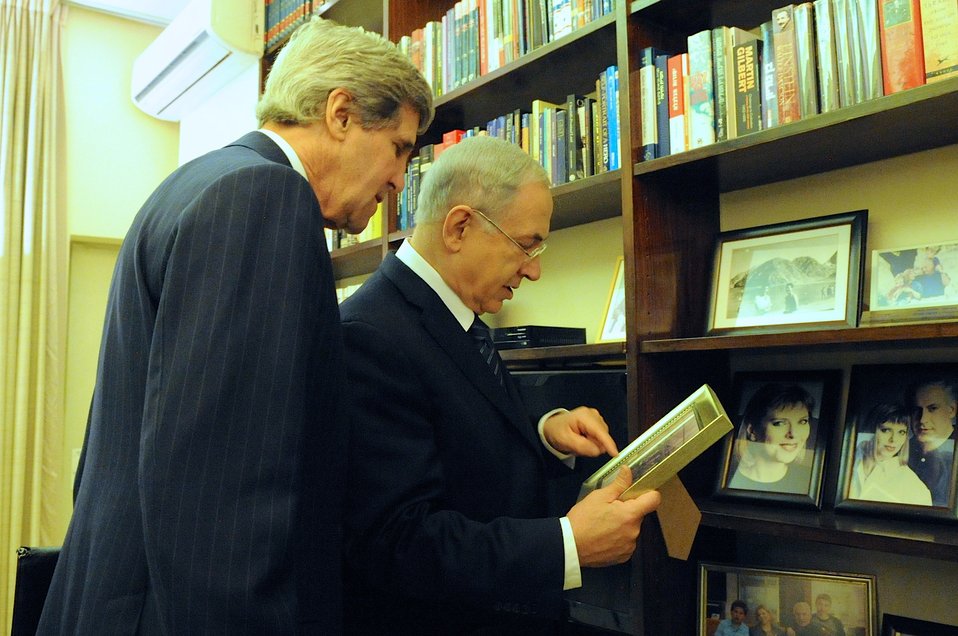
Israeli Prime Minister Netanyahu Shows Secretary Kerry Military Photo

Israeli Prime Minister Benjamin Netanyahu shows U.S. Secretary of State John Kerry a photo of him as a young soldier during a tour of his government residence in Jerusalem that preceded a dinner meeting focused on Middle East peace on January 4, 2014.